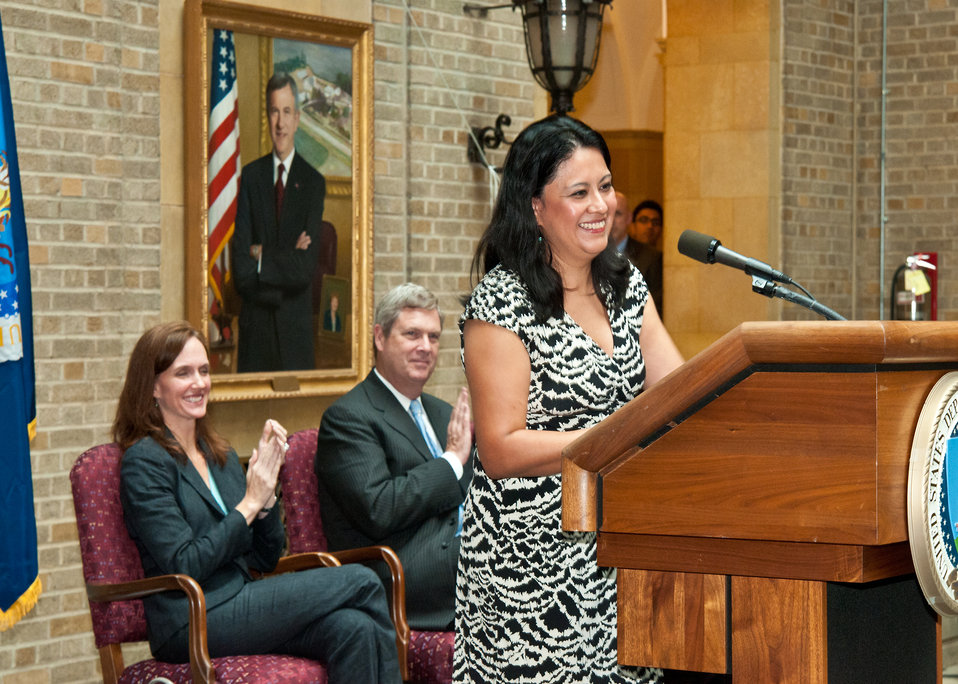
Lorena Carrasco, Combined Federal Campaign Manager for the U.S. Department of Agriculture offers closing remarks at the Opening and Charity Fair of the U.S. Department of Agriculture 2011 Combined Federal Campaign “Compassion of Individuals, Power of Community” at the USDA in Washington, DC, on Wednesday, September 21, 2011. Behind Carrasco from the left are Dr. Elisabeth Hagan, Under Secretary, Food Safety Inspection Service and Agriculture Secretary Tom Vilsack. The theme of the 2011 campaign is “Celebrating 50 Years of Caring, Serving and Giving.”